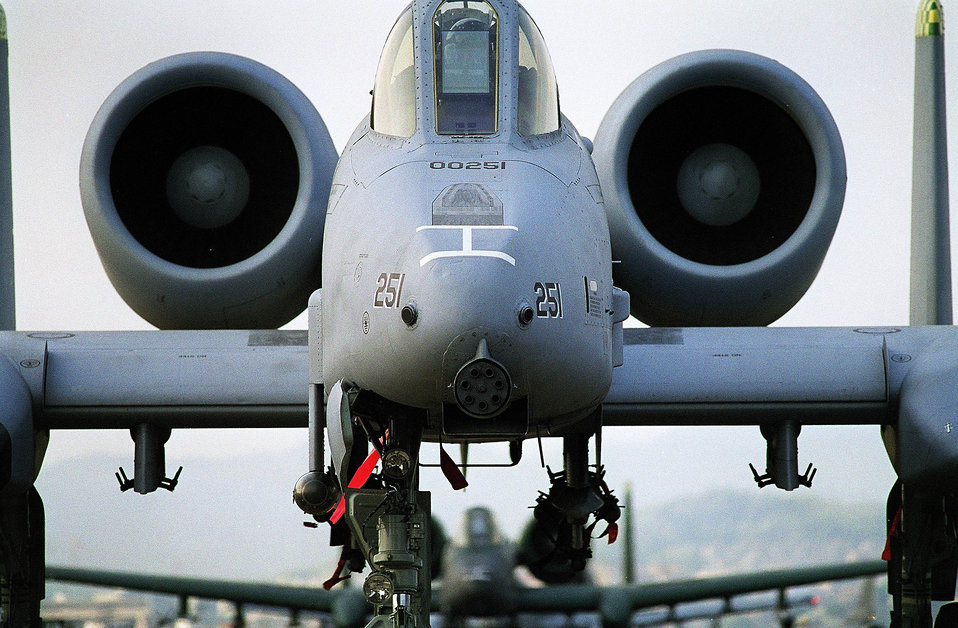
Safety first

1990's -- SUWON AIR BASE, South Korea -- An A-10A Thunderbolt II from the 25th Fighter Squadron taxies to a parking spot here after weapons load crew members safe the weapons and armaments Thursday, May 17, 1999. Units of the 51 Fighter Wing are normally based at Osan Air Base, but several currently operate at Suwon Air Base, Republic of Korea during runway renovations.